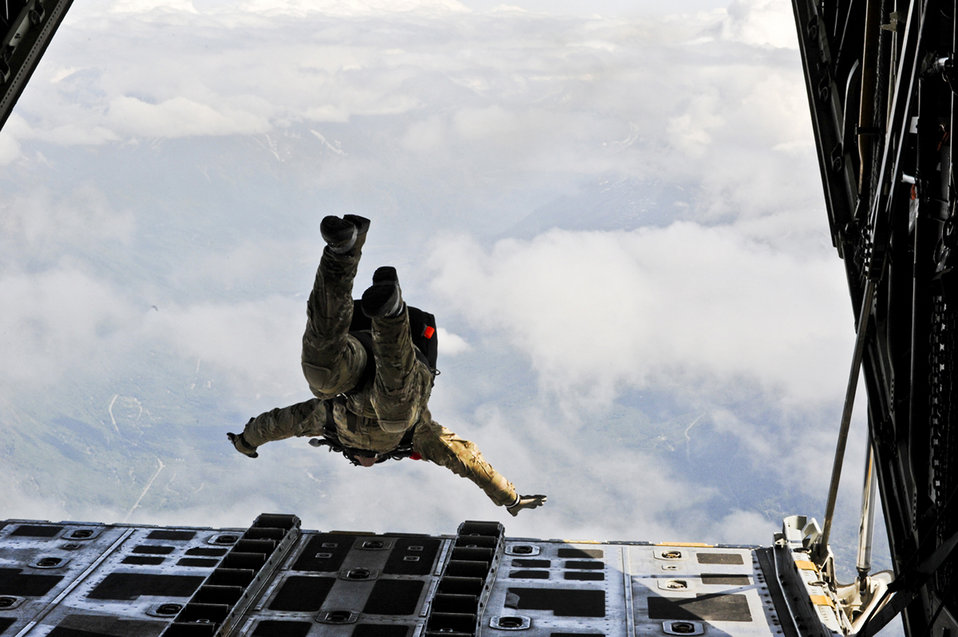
An Alaska Air National Guard pararescueman performs a high-altitude jump from a Coast Guard C-130 Hercules during a training mission June 23, 2011, above Joint Base Elmendorf-Richardson, Alaska.